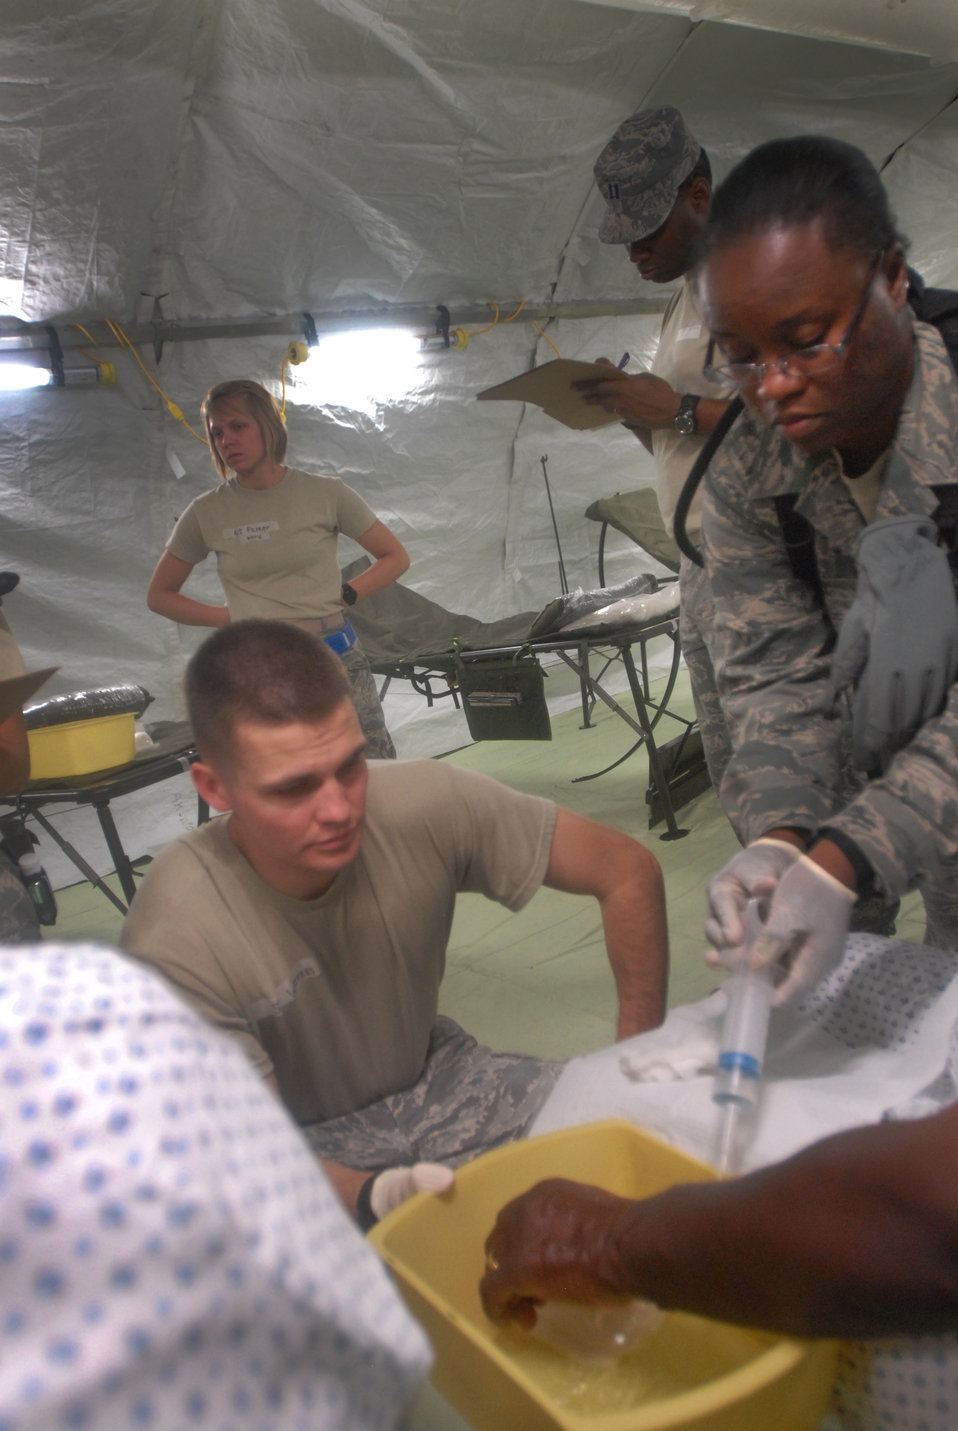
Vibrant Response 13

Medical Technicians Tech. Sgt. Robin Woodey and Senior Airman Jacob Watters iirrigate the wound of a roleplayer to try to attemp to remove radioactive particles from the patients arm.